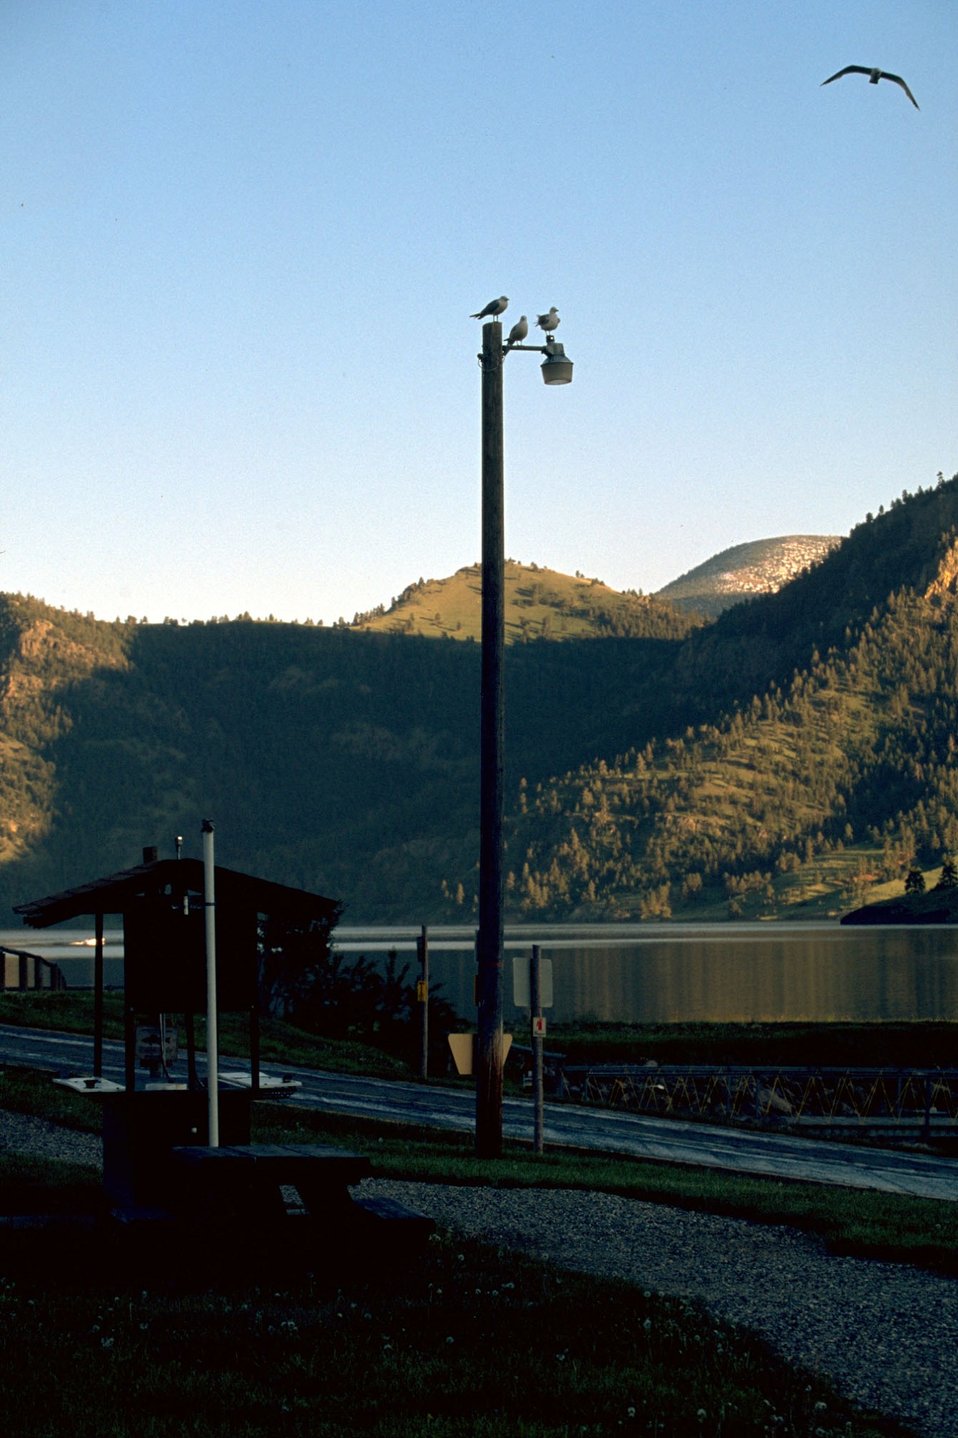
Seagulls on a lamppost at Holter Lake Campgroud